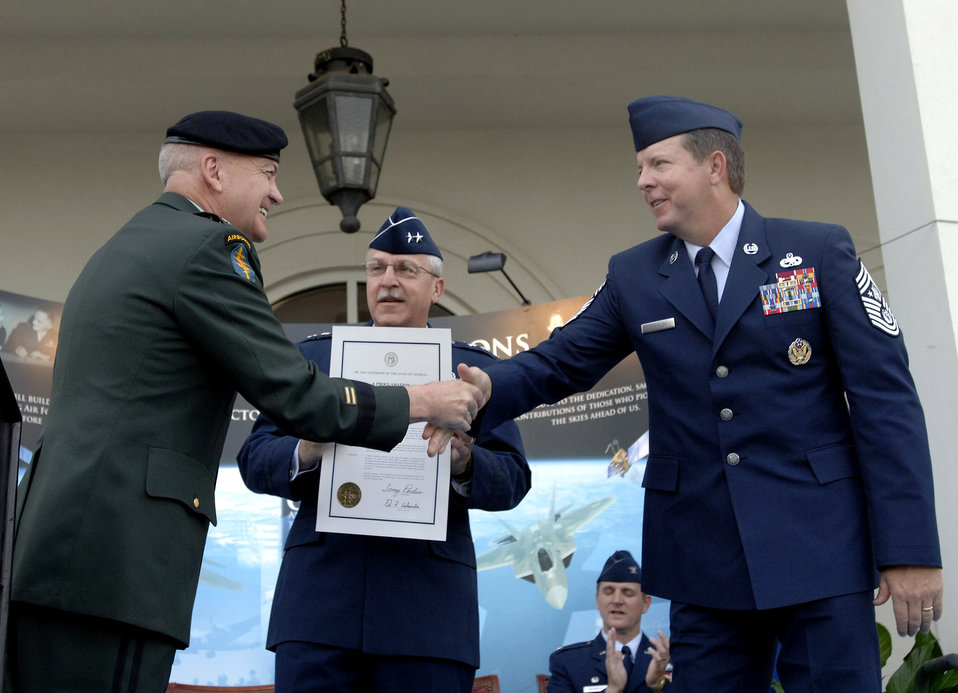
Air Force Week Atlanta kicks off

Army Maj. Gen. William T. Nesbittt congratulates Chief Master Sergeant of the Air Force Rodney J. McKinley and Maj. Gen. Martin M. Mazick on the official start to Air Force Week Atlanta Oct. 8. The Air Force Week program is meant to increase the awareness and support of the public by informing them and involving them in activities that showcase the Air Force's diverse capabilities and missions, its accomplishments and the sacrifice of its Airmen. Atlanta is one of six cities throughout the country chosen to host an Air Force Week Oct. 8 to 14. The theme for the year is